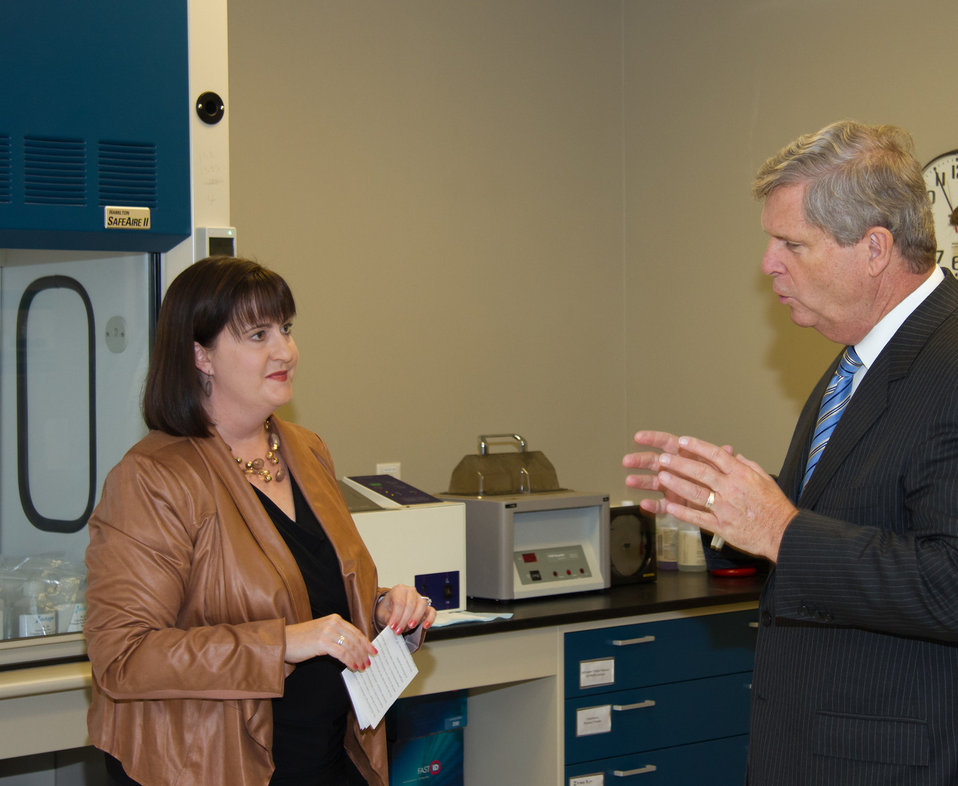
Dr.Tandace Bell, Chief of Grain Inspection, Packers and Stockyards Administration (GIPSA), Biotechnology and Analytical Services Branch, discusses with Agriculture Secretary Tom Vilsack GIPSA's role in supporting agricultural biotechnology in Kansas City, MO, on Wednesday, Oct. 23, 2013.